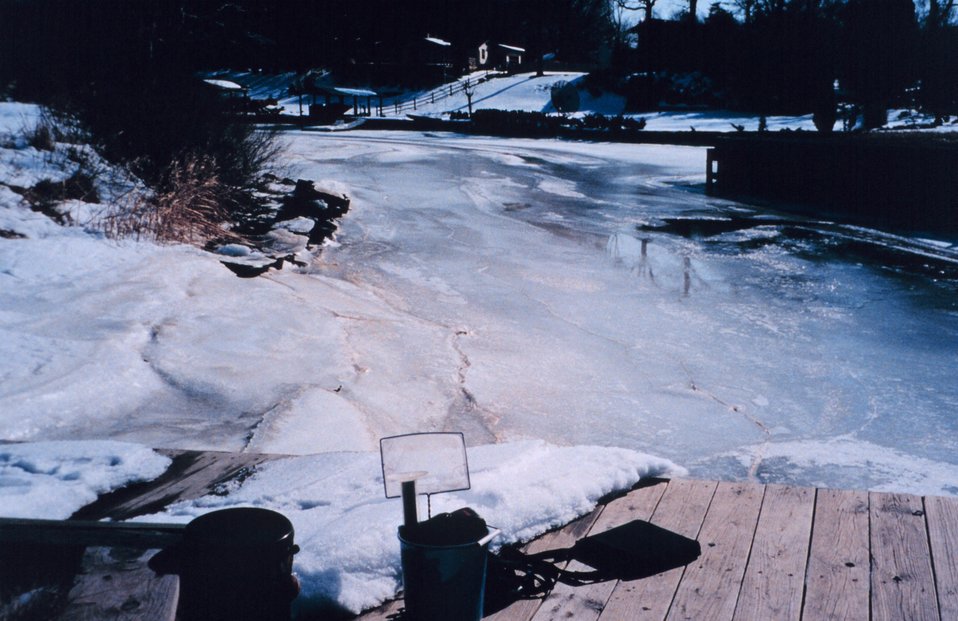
Snow and ice along the Patuxent River.